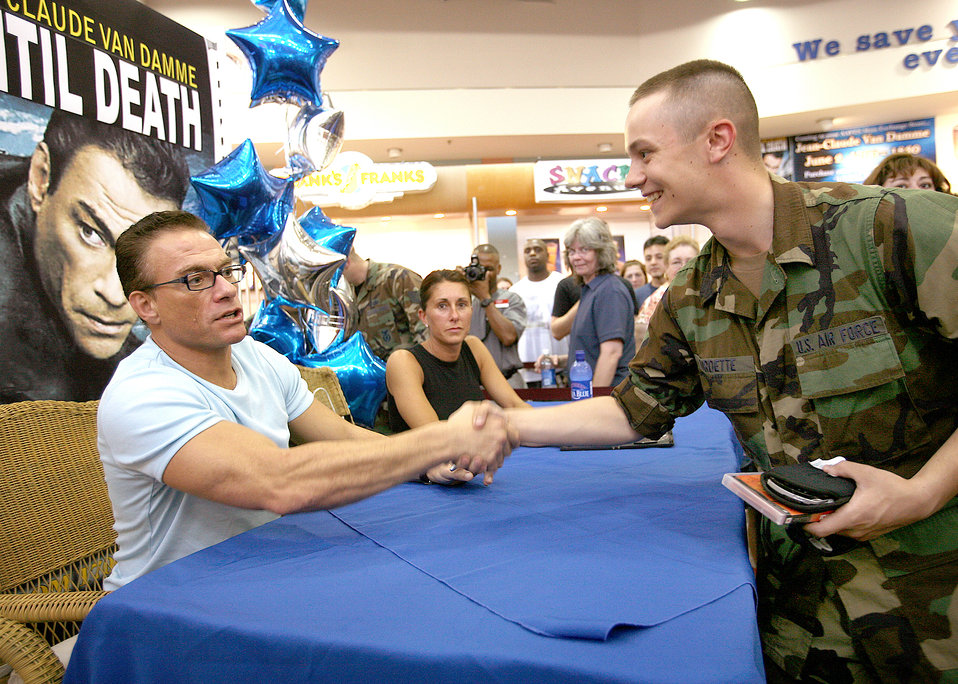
Hangin' with Jean-Claude

Airman Basic Jeffery Birdette shakes hands with actor Jean-Claude Van Damme June 2 at the base exchange at Lackland Air Force Base, Texas. Airman Birdette is a security forces technical training student at Lackland.